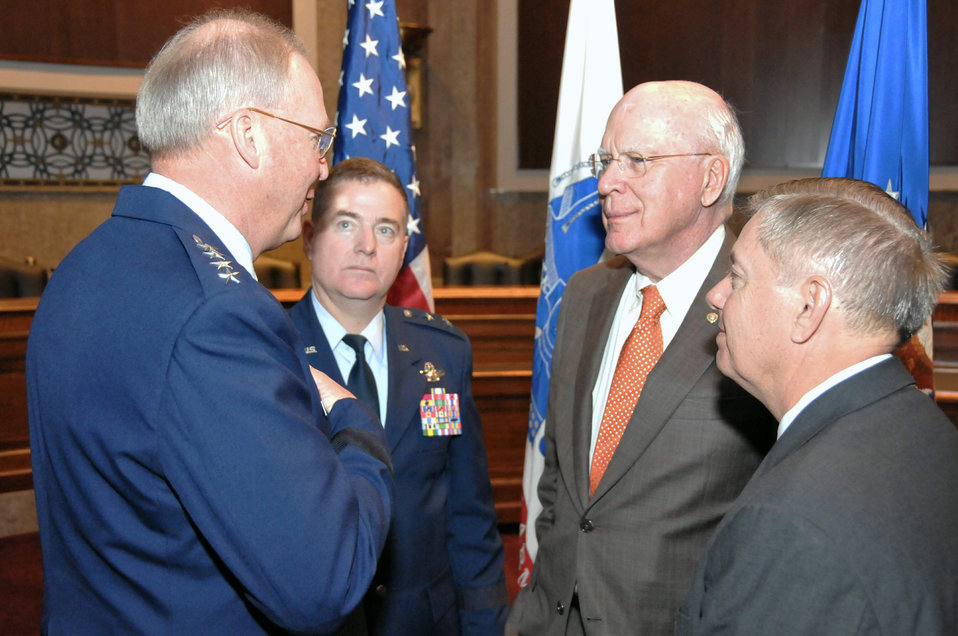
National Guard

Co-chairs of the Senate National Guard Caucus, Sen. Patrick Leahy, of Vermont (left center), and Sen. Lindsey Graham, of South Carolina (right center), talk with Gen. Craig McKinley (right) and Gen. Michael Dubie, after Senators Leahy and Graham spoke to fellow senators and senior National Guard leaders Mar. 3, 2011. General McKinley is the chief of the National Guard Bureau. General Dubie is the adjutant general for the state of Vermont.